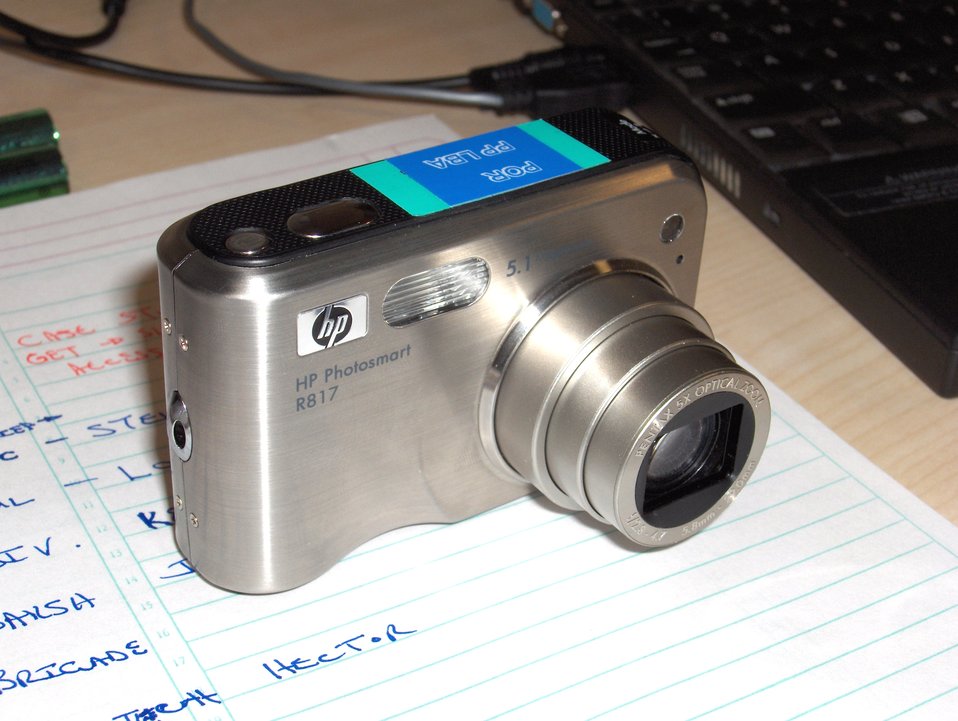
This photo was taken by me, and I hereby release it to Public Domain.